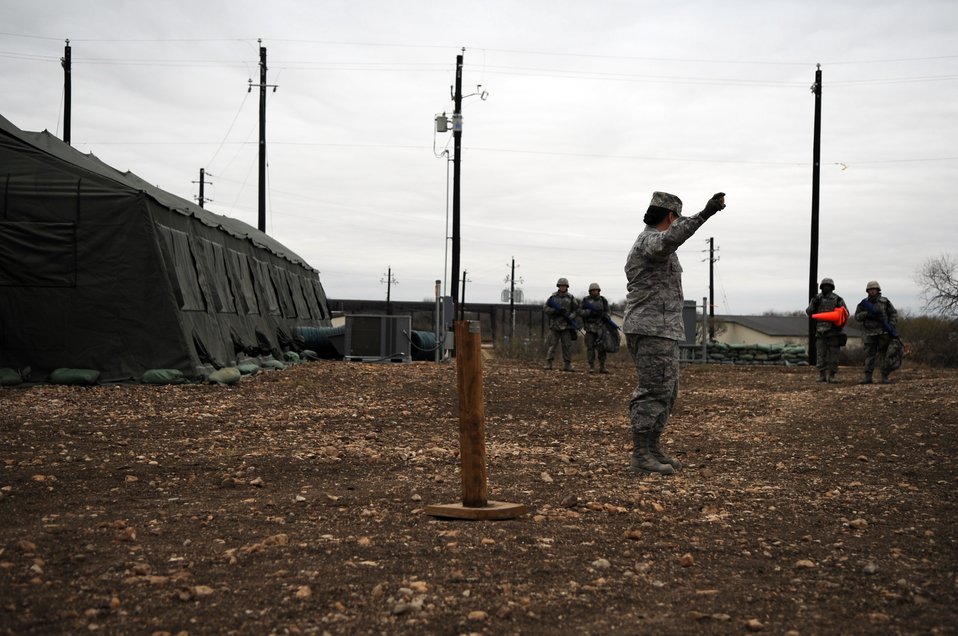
Trainees slew the BEAST in new basic training program

Airmen Basic trainees in body armor walk through an unexploded ordnance disposal training lesson taught by Tech. Sgt. Nicole Pino during the five-day deployment exercise called the Basic Expeditionary Airman Skills and Training, or BEAST, which kicked off Dec. 15 at Lackland Air Force Base, Texas. Sergeant Pino is a military training instructor for the 737th Training Support Squadron. The BEAST is the newly built complex added into the extended, 8.5-week Basic Military Training curriculum that began Nov. 5.